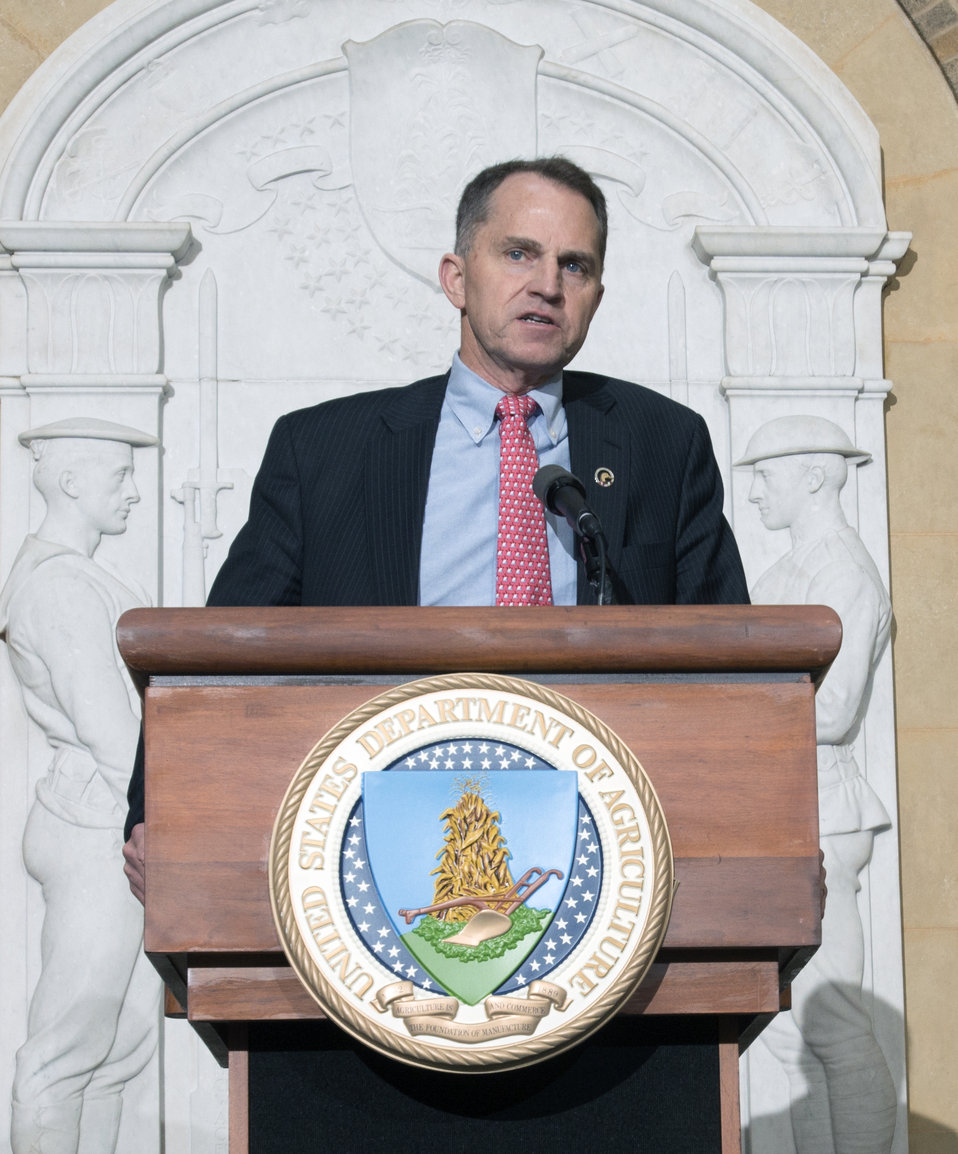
President of Ducks Unlimited George Dunklin speaks at the Ducks Unlimited/USA Rice Federation event at the U.S. Department of Agriculture (USDA) in Washington, D.C. on Tuesday, May 6, 2014.